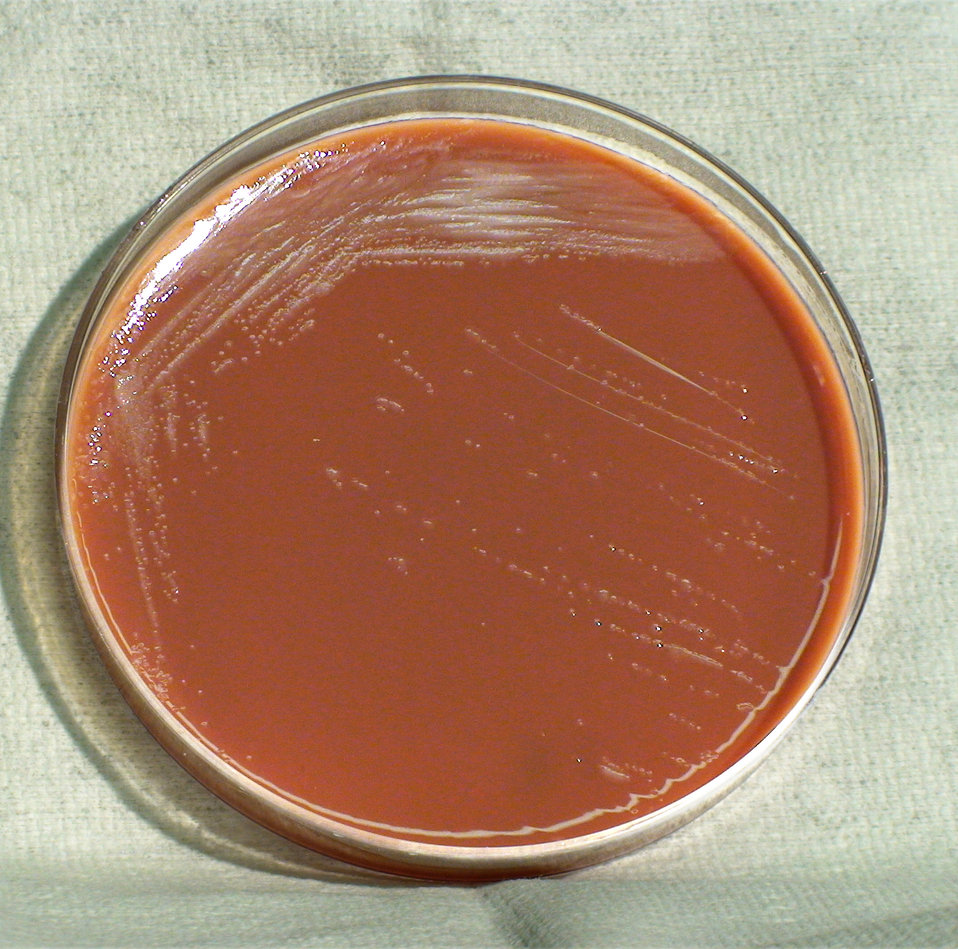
This photograph depicts the colonial morphology displayed by Gram-negative Burkholderia thailandensis bacteria, which was grown on a medium of chocolate agar, for a 24 hour time period, at a temperature of 37�C. See PHIL 12418 for a closer view of these bacterial colonies. Also, see both PHIL 12403 and 12404 for a view of this bacterial specie, grown on the same medium, at the same temperature, however, for a greater amount of time (48hrs), and take a look at PHIL 12425 and 12426, which depict the B. thailandensis colonial growth, again on the same medium, and for the same cultivation time (24hrs), but at a higher temperature (42�C).